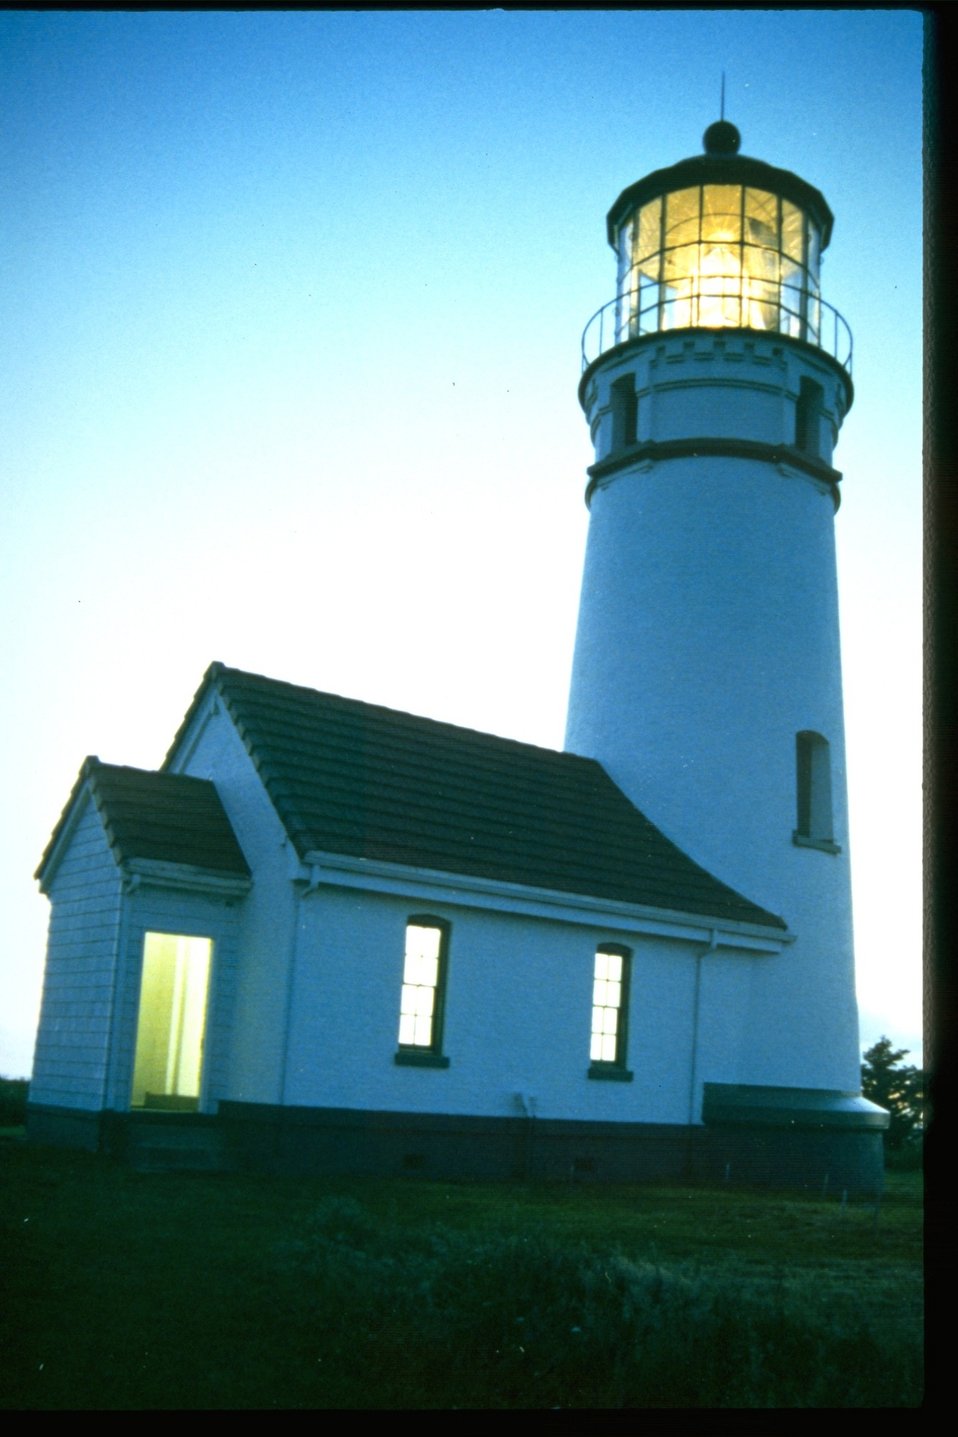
Cape Blanco Lighthouse at nighttime.